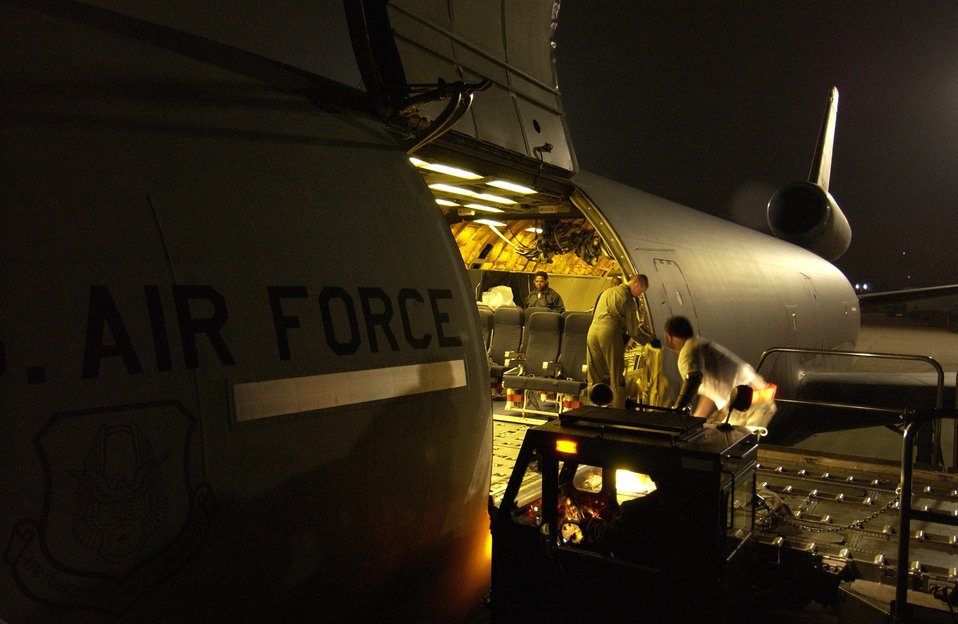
Pakistan Earthquake Relief

LANGLEY AIR FORCE BASE, Va. -- Airmen load a KC-10 Extender aircraft with relief supplies here Oct. 11. The Air Force is delivering disaster relief supplies and services as part of a multinational effort to provide aid and support to Pakistan and parts of India and Afghanistan following a devastating earthquake. The KC-10 is from McGuire Air Force Base, N.J.